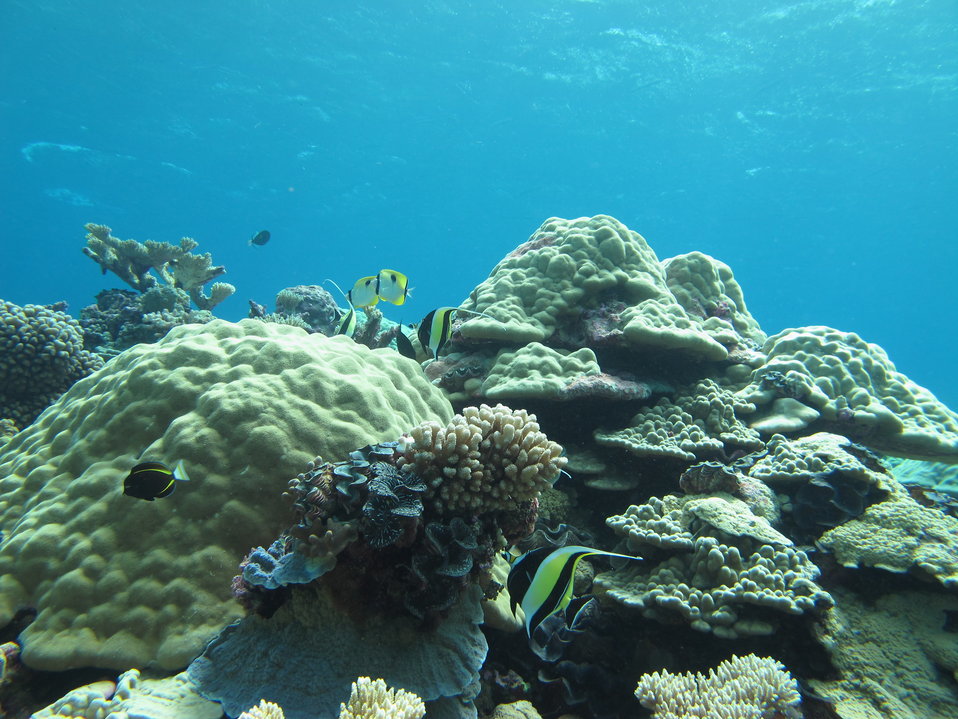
Moorish Idols and teardrop butterfly fish are only a couple of immense varieties of reef fish -297 species identified thus far- that call Kingman Reef National Wildlife Refuge home.